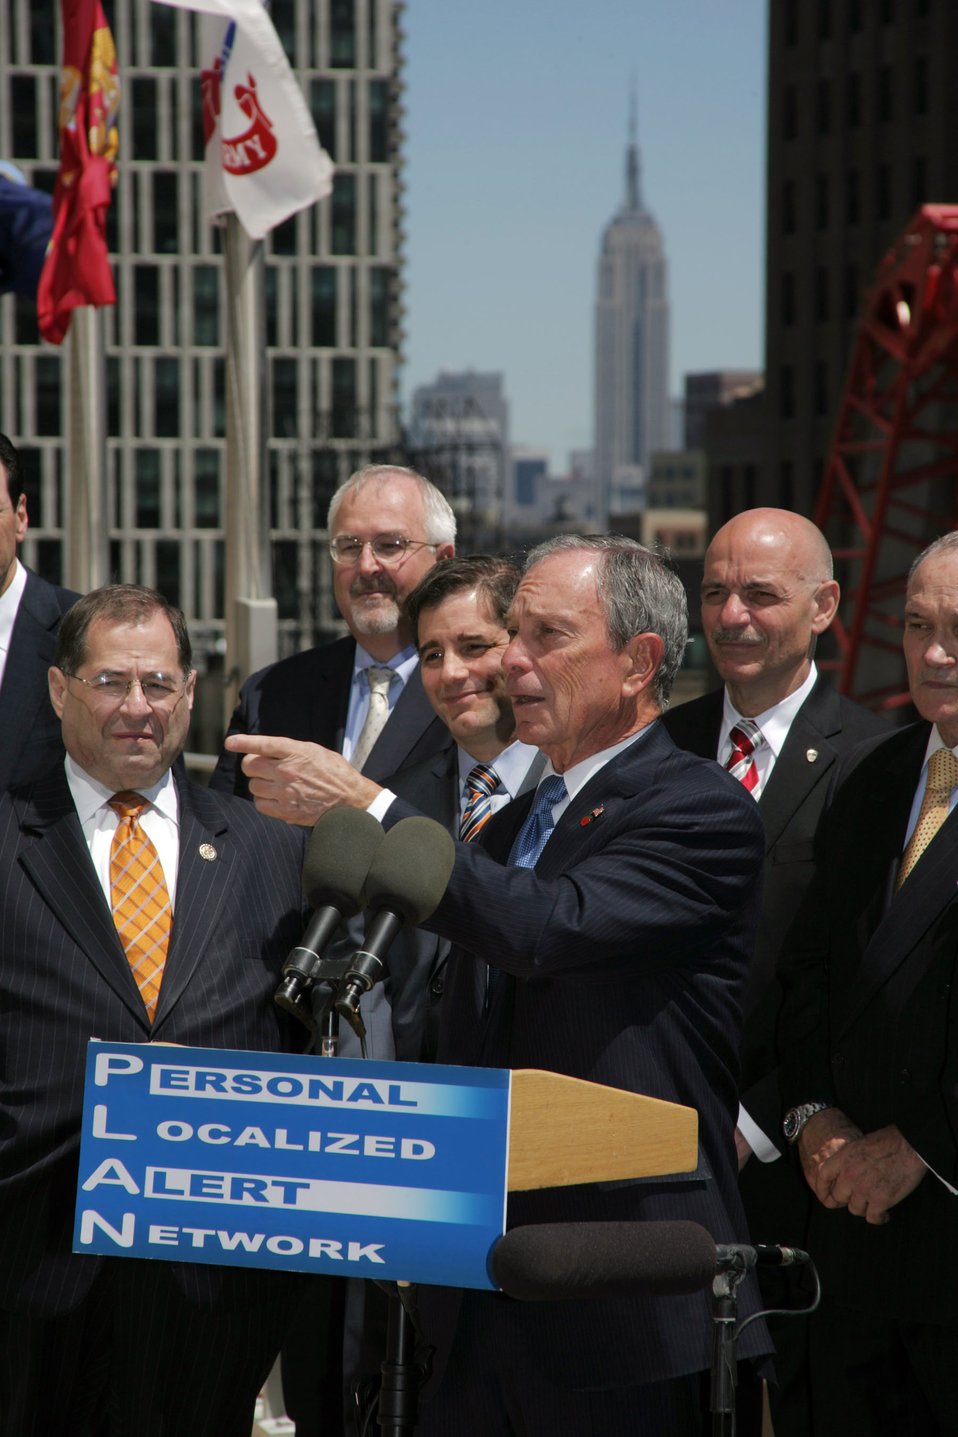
Mayor Bloomberg PLAN launch event